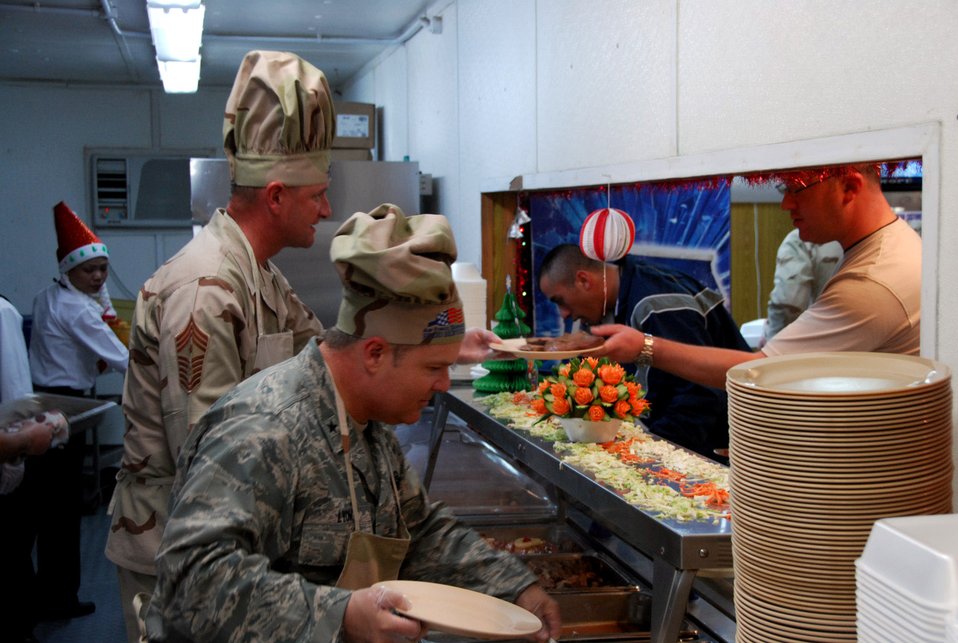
Deployed Airmen enjoy holidays

Brig. Gen. Charles W. Lyon and Chief Master Sgt. Lloyd Hollen serve dinner to deployed troops Dec. 25 at a Southwest Asia air base. General Lyon is the 379th Air Expeditionary Wing commander, and Chief Hollen is the 379th AEW command chief.